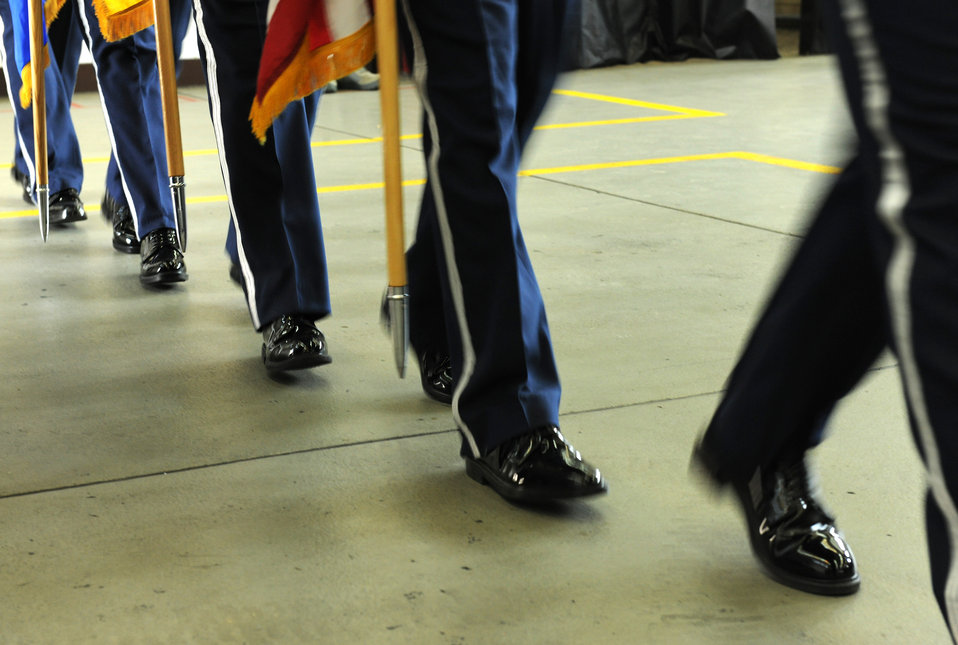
Honor guard

Members of the 52nd Fighter Wing Honor Guard prepare to present the colors at a retirement ceremony April 22, 2011, at Spangdahlem Air Base, Germany.